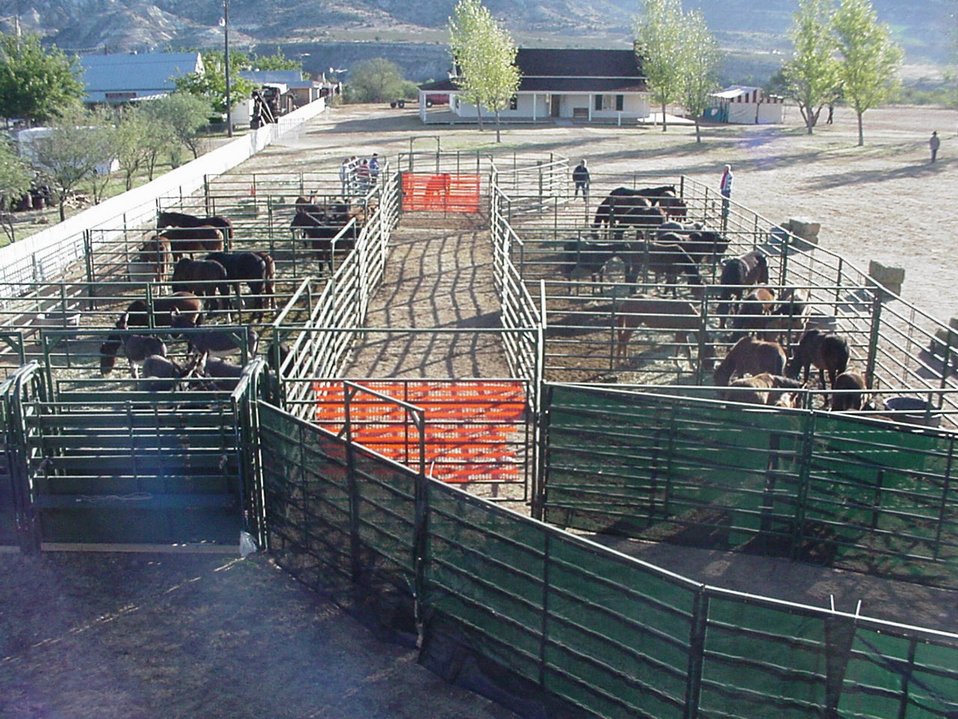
An overhead view of the protable corrals used by the BLM for the wild horse and burro adoption.